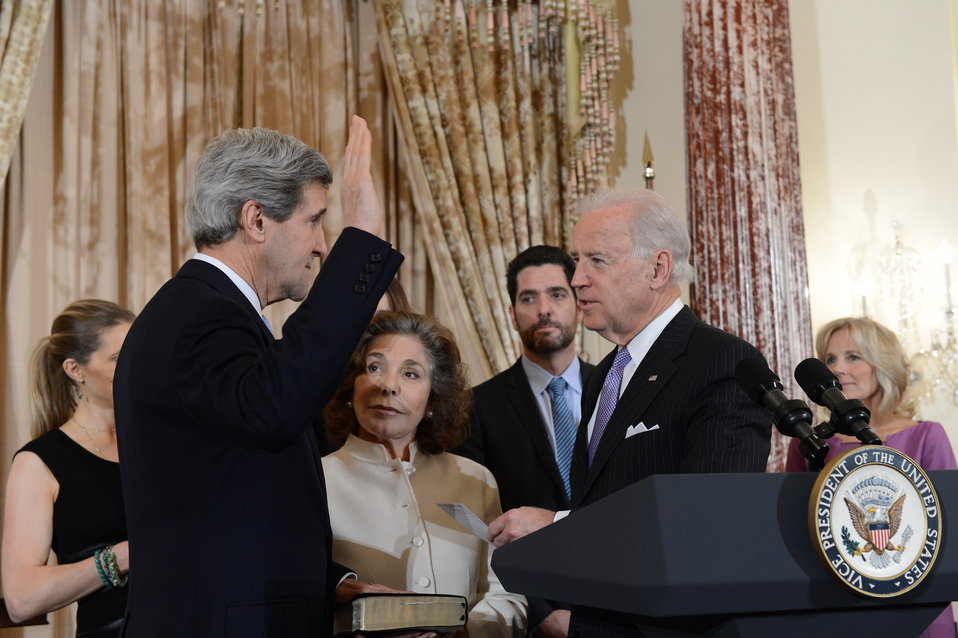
Vice President Biden Swears In Secretary Kerry

U.S. Vice President Joe Biden swears in Secretary of State John Kerry, surrounded by his family, at the U.S. Department of State in Washington, D.C., February 6, 2013.